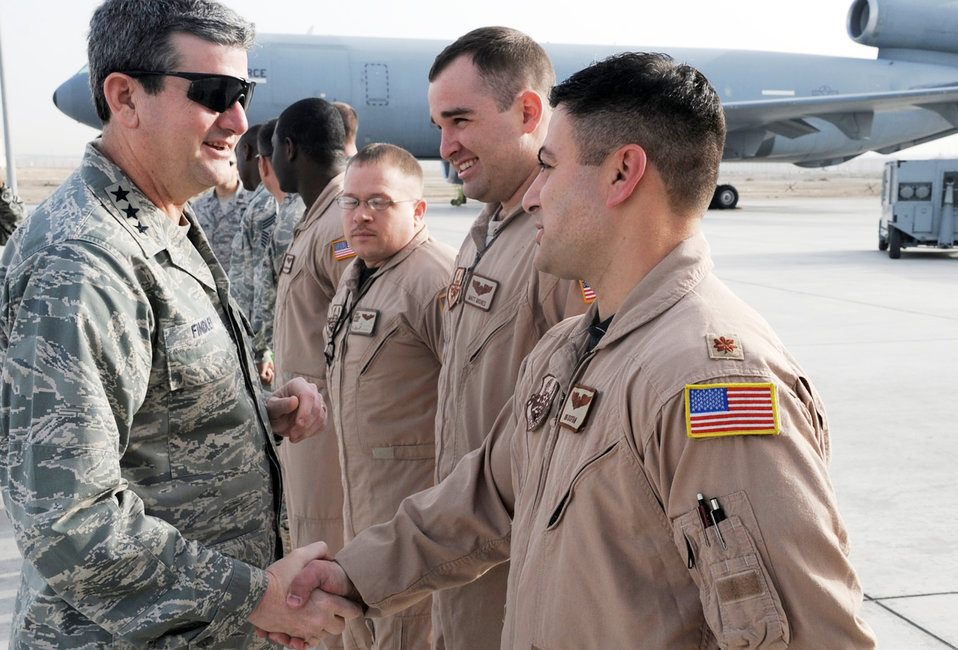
Mobility general visits Airmen in Southwest Asia

Lt. Gen. Vern M.